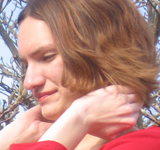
User EulalieCrow